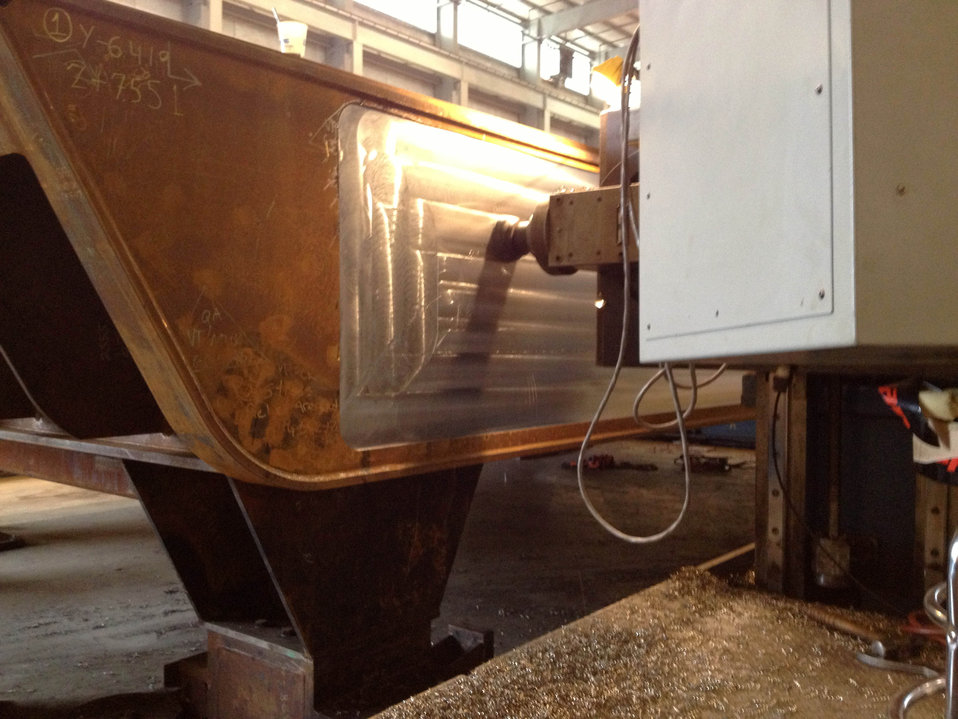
District staff checks progress on Folsom Dam auxiliary spillway gates

A machine shaves off a layer of steel on a bulkhead gate for the new Folsom Dam auxiliary spillway Nov. 28, 2012, at the Oregon Iron Works’ Vancouver, Wash., facility. Personnel from the U.S. Army Corps of Engineers Sacramento District, including commander Col. Bill Leady, took a tour of the site to gauge the progress on 12 massive bulkhead and tainter gates, which will control the flow of water from Folsom Lake through the spillway’s control structure. The spillway project is a joint effort of the U.S. Army Corps of Engineers, the U.S. Bureau of Reclamation, and state and local partners to reduce flood risk throughout the Sacramento region. The project is scheduled to be completed in 2017.